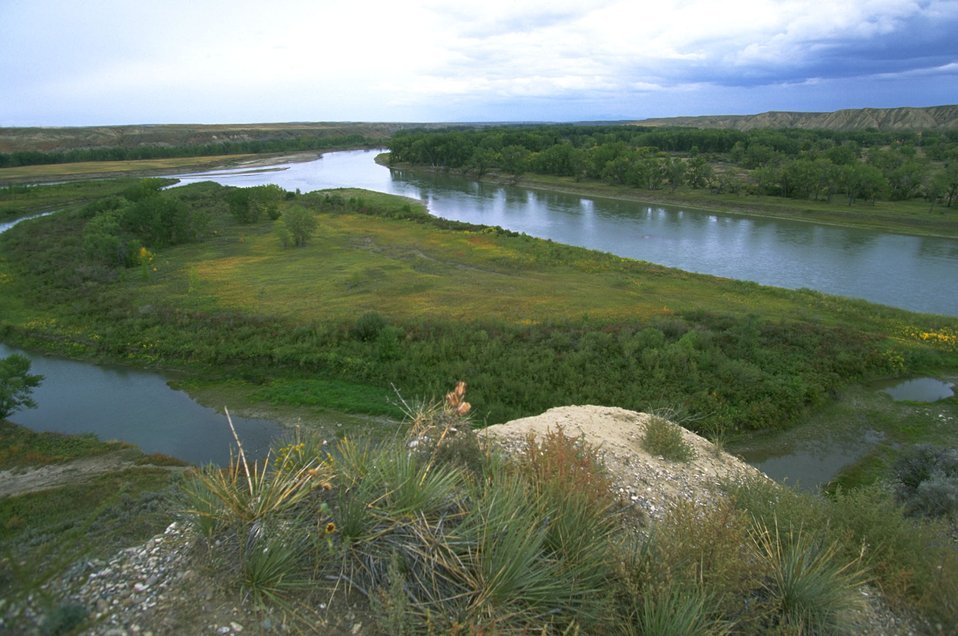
Decision Point, the confluence of the Missouri and Marias Rivers